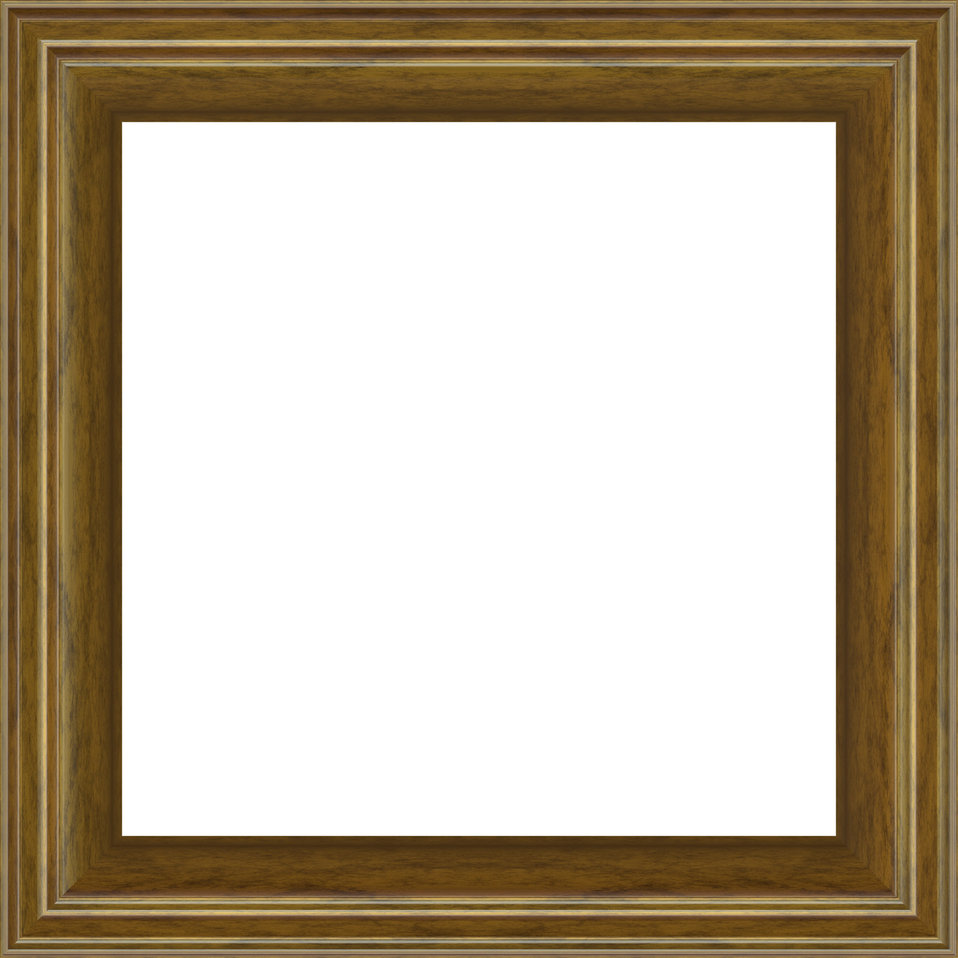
Old wood frame

A nice wood frame that is 2000x2000 pixels in size...created in filter forge...